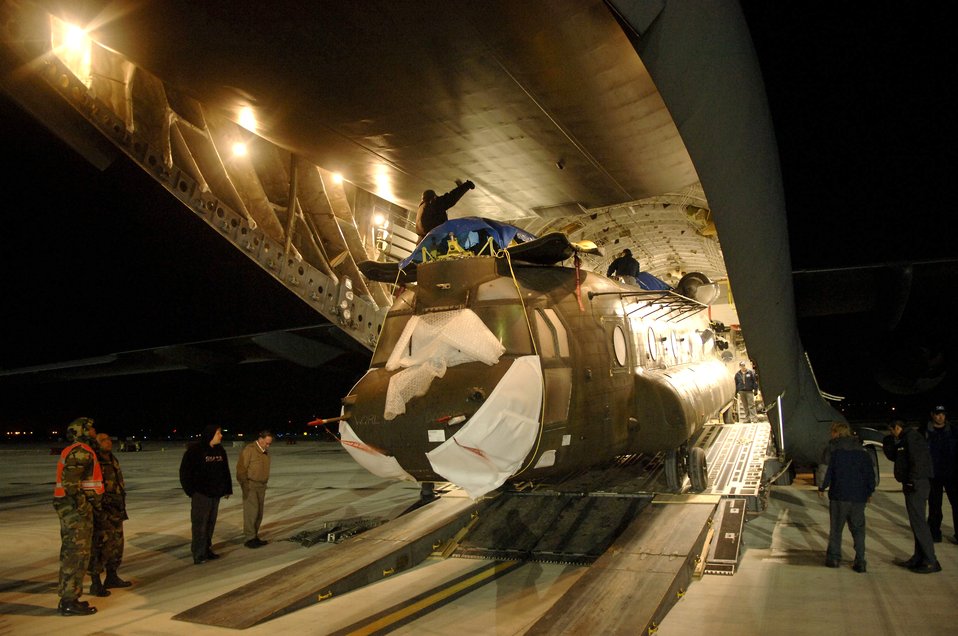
C-17 carries Chinook

NAVAL STATION ROTA, Spain (AFPN) -- An Army CH-47 Chinook helicopter is loaded onto a C-17 Globemaster III Feb. 13. The Chinook was initially offloaded from the U.S.S. Pililaau here.